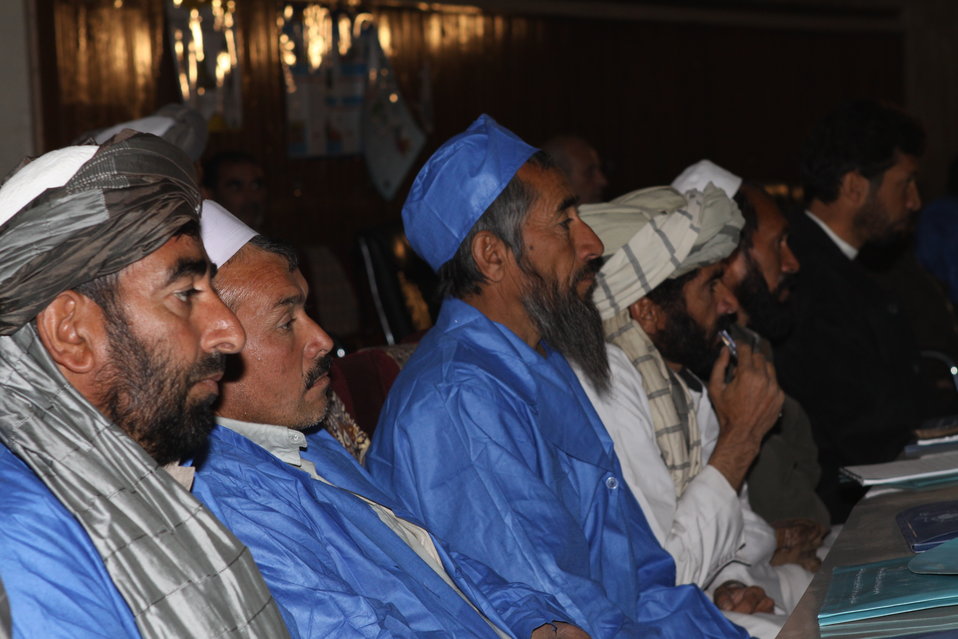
Community Health Workers Celebrated

Kabul, Afghanistan | December 5, 2010 — In support of the United Nations designated International Volunteer Day for Economic and Social Development, Afghanistan’s Ministry of Public Health celebrated its annual Community Health Worker Day today. Acting Minister of Public Health Dr. Suraya Dalil, USAID Senior Deputy Mission Director Robert Hellyer, other government officials, and international donors joined in recognizing the critical contribution of community health workers in Afghanistan and encouraging them to continue their voluntary support to their communities.
The event praised the contributions of the more than 22,000 volunteers throughout the country who deliver community level health-education, counseling, and services out of village health posts located in private homes. The Ministry of Public Health envisioned that community-based healthcare programs will actively encourage communities and families to adopt healthy lifestyles and behaviors, and provide families access to high quality and socially acceptable preventative medicine and life-saving services.
“We have 22,000 community health workers in Afghanistan that are able to implement the basic and standard medicines. They all have been trained through a job description,” said Minister Dalil. Addressing the health workers, she added, “I am proud and feel powerful that I have people like you.”
USAID-funded health projects collaborate closely with the Ministry of Public Health to improve the health and nutritional status of Afghans, provide quality primary healthcare, and promote healthy behaviors at the community and household-levels. USAID supported the training of more than 9,000 of the volunteer community health workers currently working in Afghanistan.
“On behalf of the American people, I congratulate the Community Health Workers for their diligence to gain the skills and knowledge necessary to serve their communities in this important role,” said USAID Senior Deputy Mission Director Hellyer. “USAID strongly supports community based health care and believes that quality community-based health services are essential to reaching Afghanistan’s Millennium Development Goals.”
To support the Basic Package of Health Services, USAID assisted in developing the community health worker training manual, helped train community health worker supervisors and master-trainers, facilitated in-service training, and produced and developed reporting tools, job aids, and education materials.